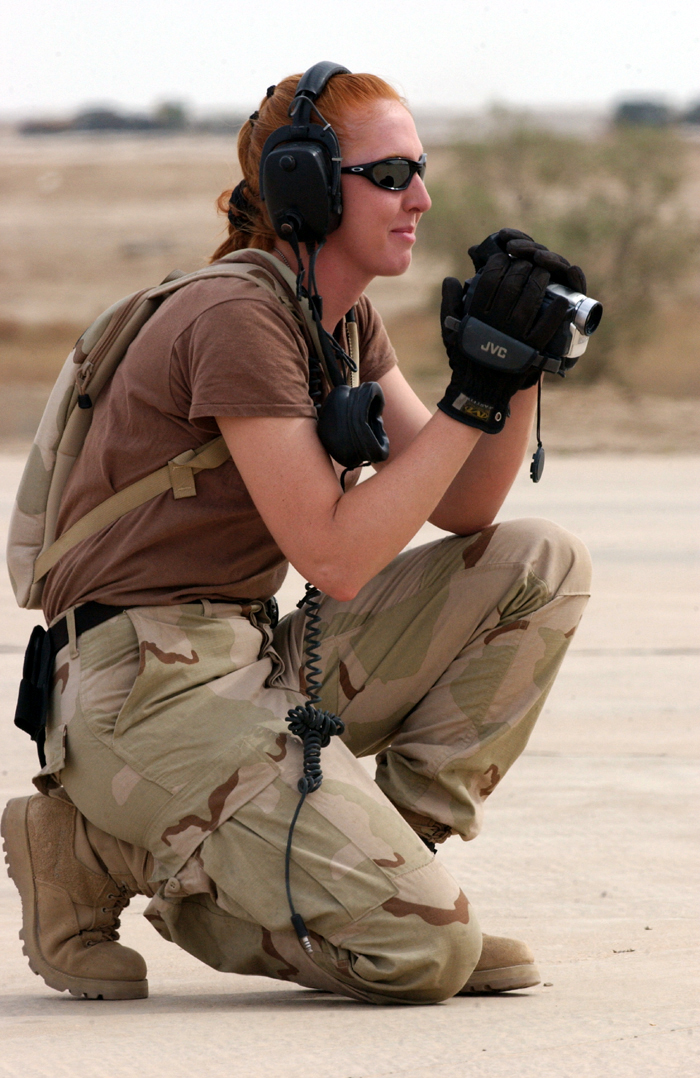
For the record

OPERATION IRAQI FREEDOM -- Staff Sgt. Christine Lesko, an aircraft crew chief with the 442nd Fighter Wing, videotapes activities of her counterparts during the launch on April 18 of A-10s for a combat mission over Iraq. The 442nd is from Whiteman Air Force Base, Mo., and is deployed to Tallil Air Base in southern Iraq.